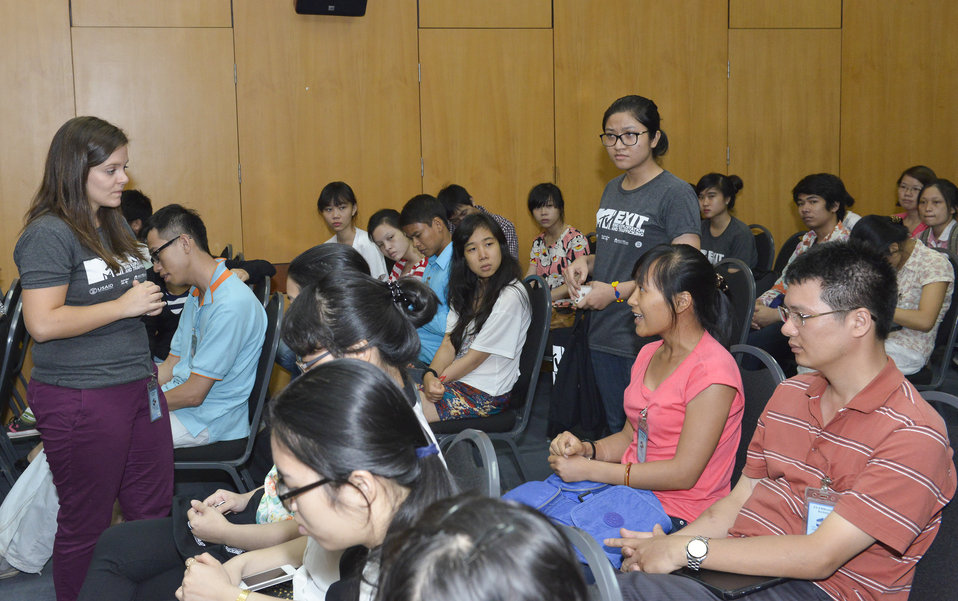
MTV Exit Talk to Engage Students in the Fight against Human Trafficking

Hanoi. June 5, 2014.